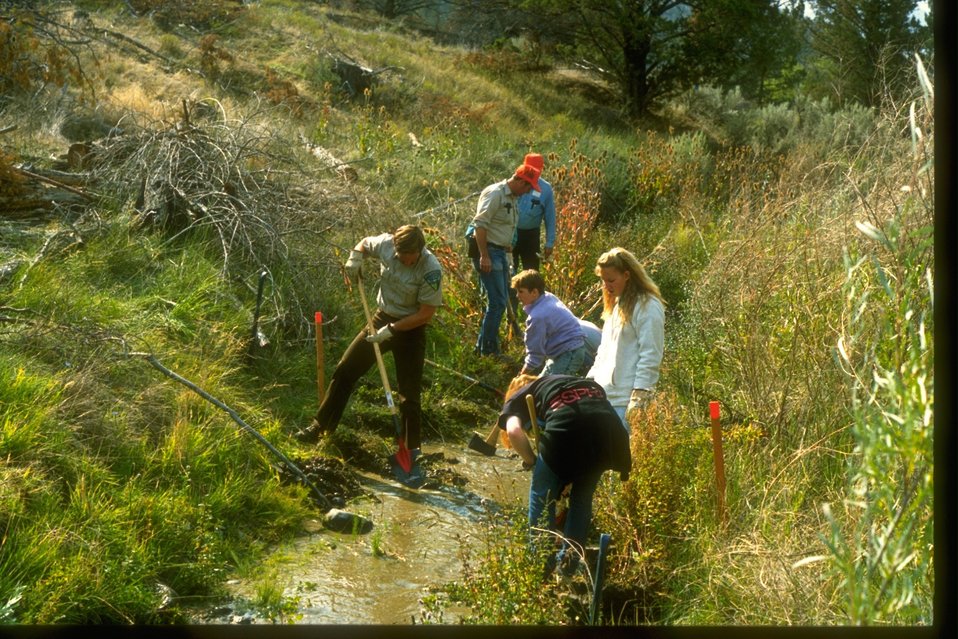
Volunteers working on an instream structure on Volunteer Day along Bridge Creek.